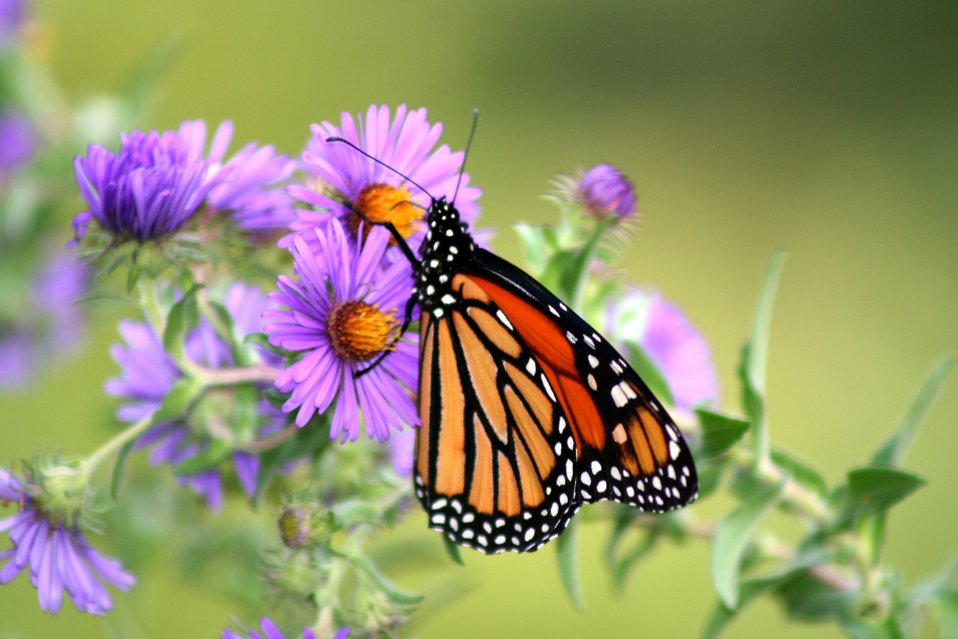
Monarch on New England Aster

Monarch on a New England aster.